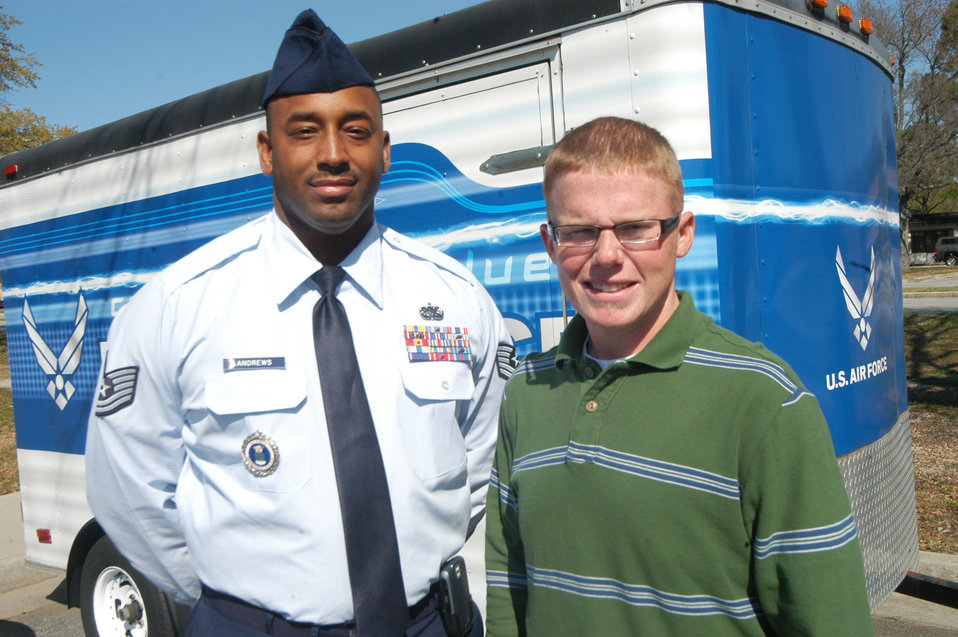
AF recruit drops 128 pounds to enlist

Tech. Sgt. Damon Andrews, a recruiter attached to the 367th Recruiting Group at Robins Air Force Base, Ga., stands with Will Sims, who lost 125 pounds in eight months to fulfull his goal to enlist in the U.S. Air Force.